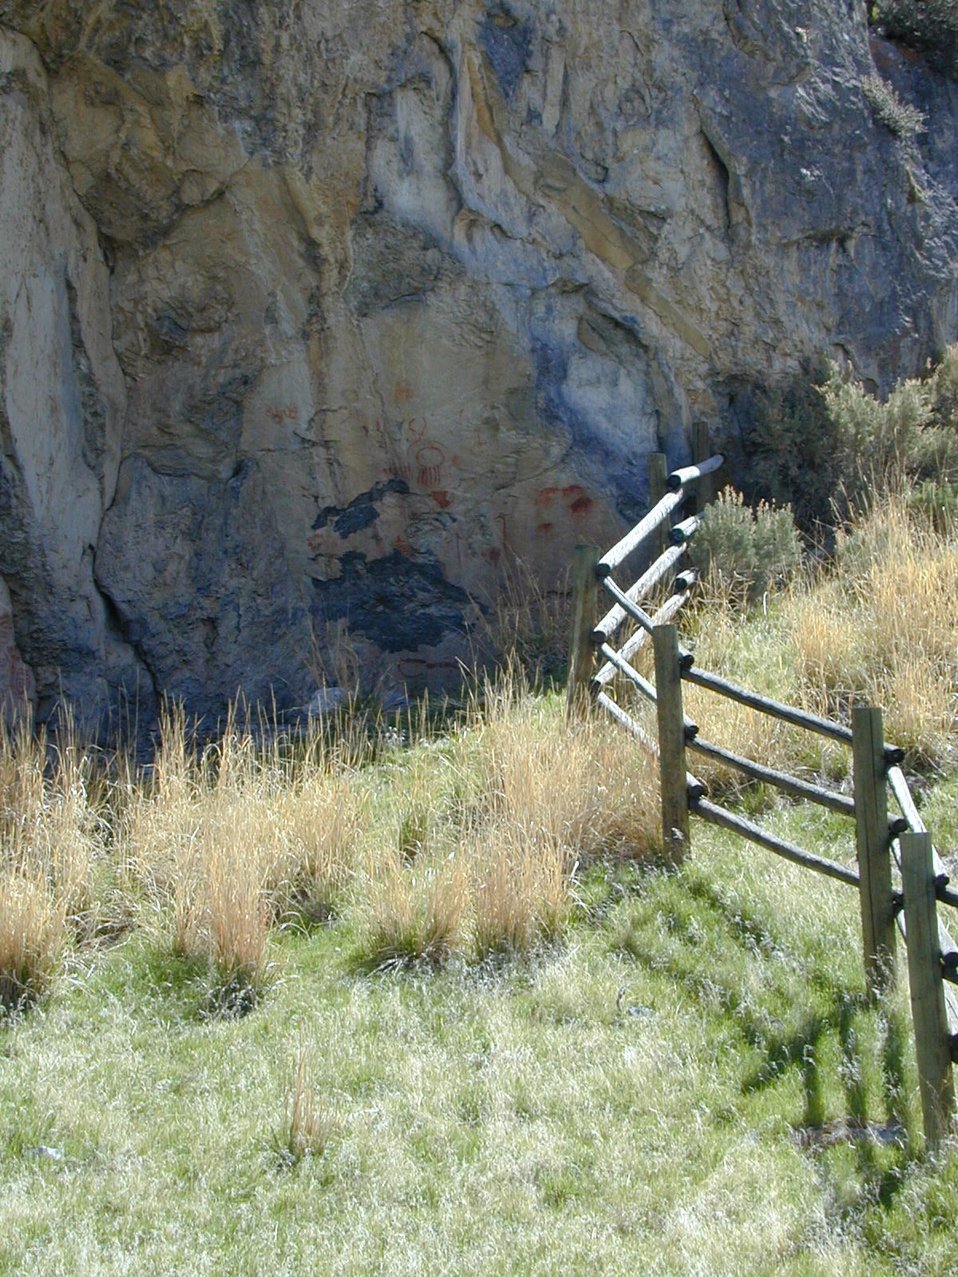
Birch Creek Valley Idaho Falls Field Office USRD Upper Snake River District